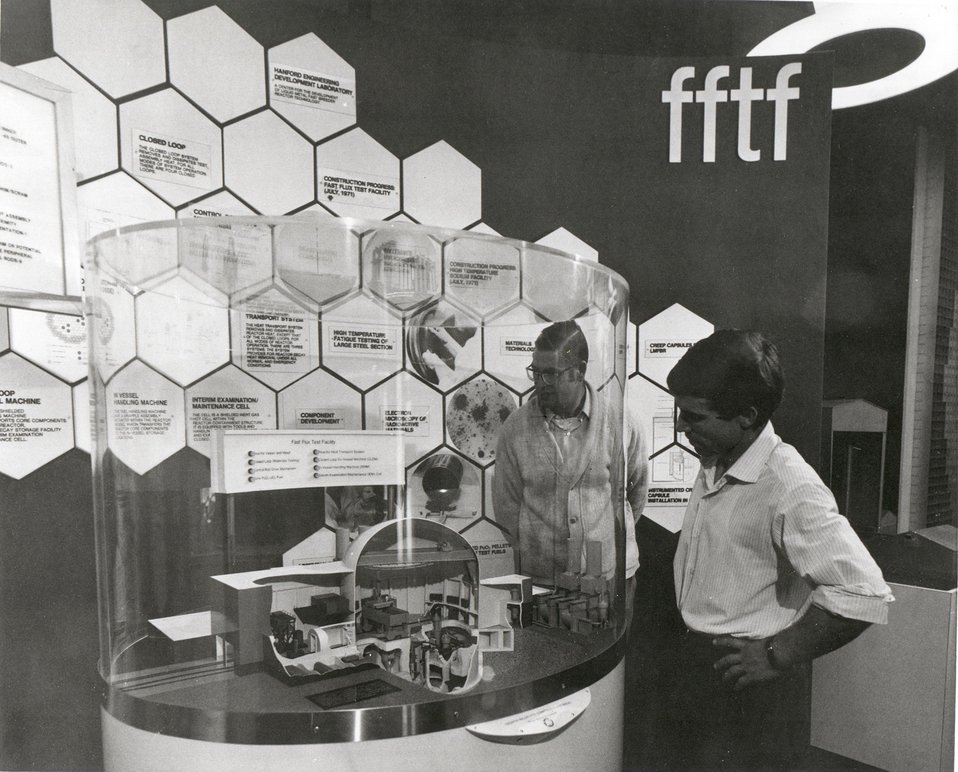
Nuclear power was a topic of general interest at the Fourth United Nations Conference on the Peaceful Uses of Atomic Energy, held in Geneva, Switzerland, September 6 to 16, 1971. A lighted model of the Fast Flux Test Facility (FFTF) is shown here at the conference. c. 1971.